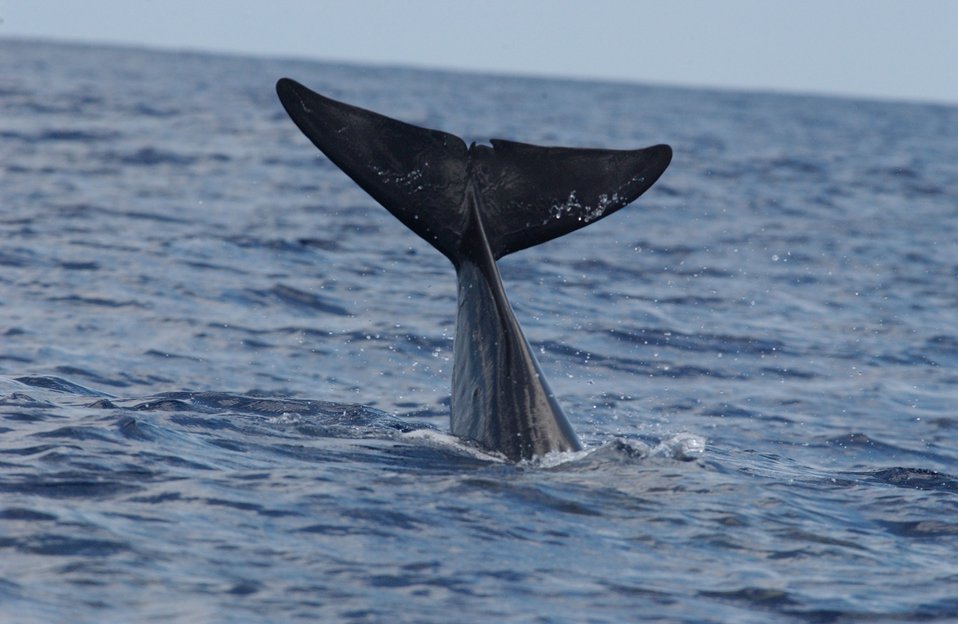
Pilot whale